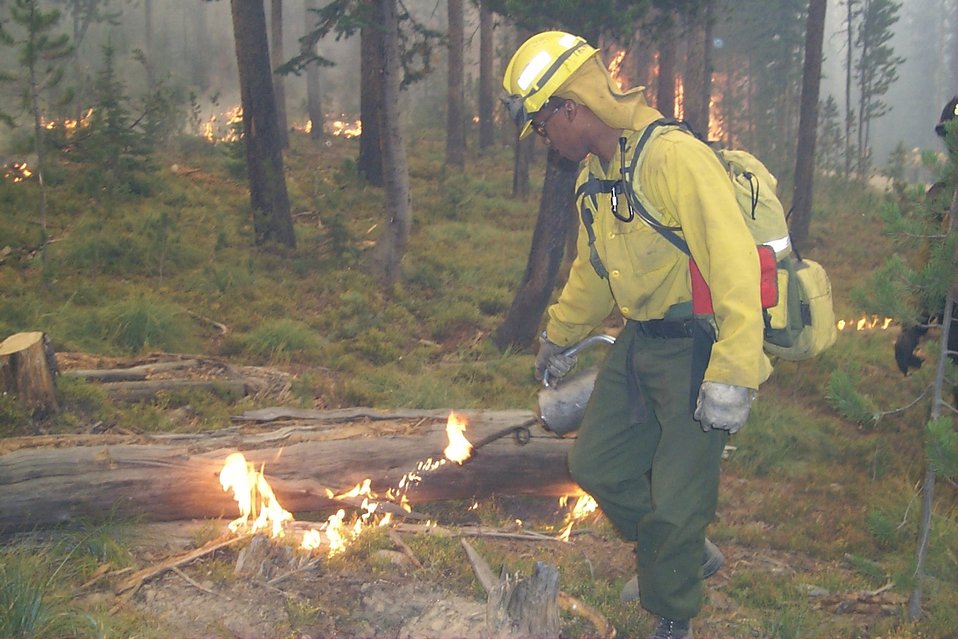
Controlled burn Fire Clearwater Fire Salmon Field Office USRD Upper Snake River District